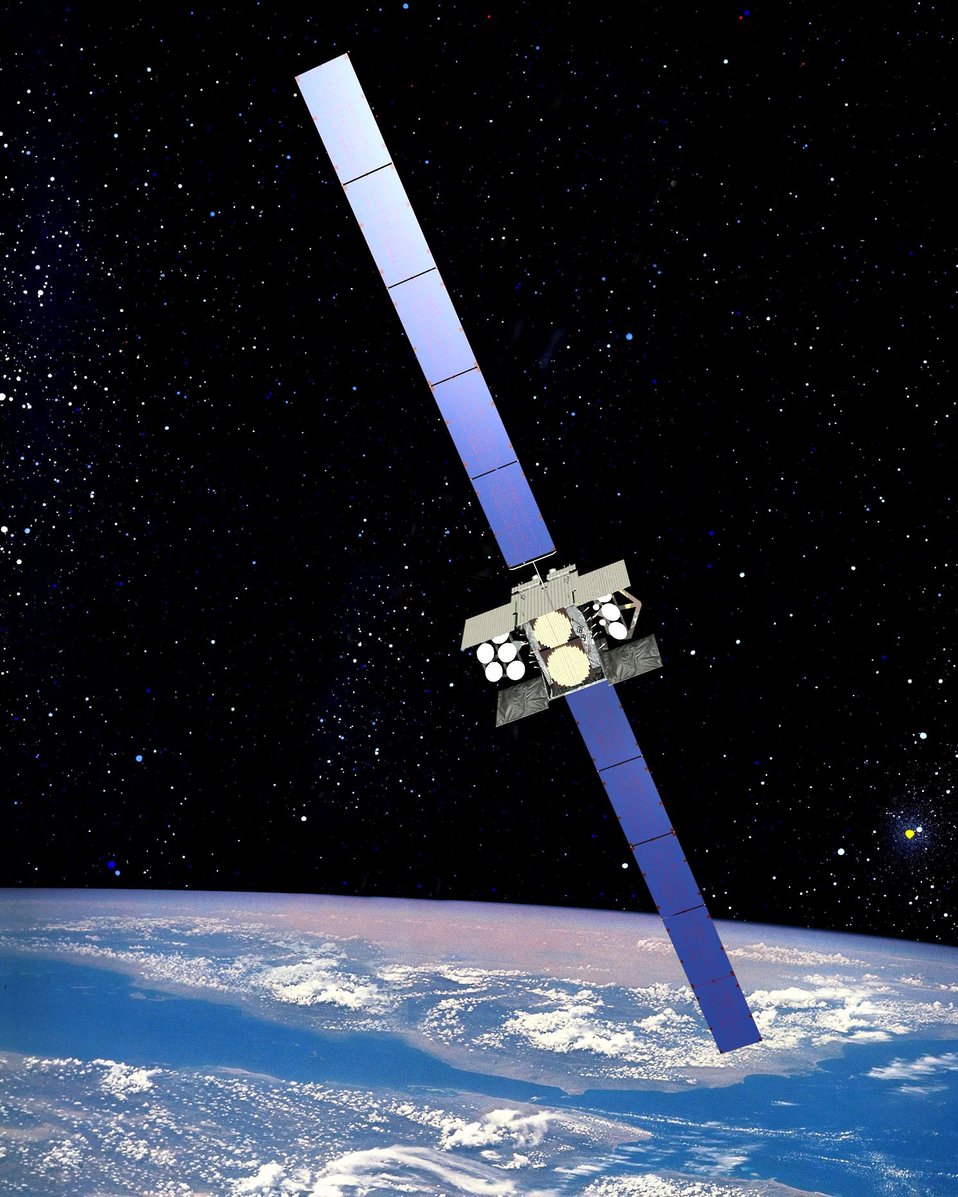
Air Force, Boeing team up for early-orbit operations

The Wideband Global SATCOM satellite is the successor to the Defense Satellite Communications System-III. One WGS satellite has about 12 times the bandwidth of a DSCS-III satellite.